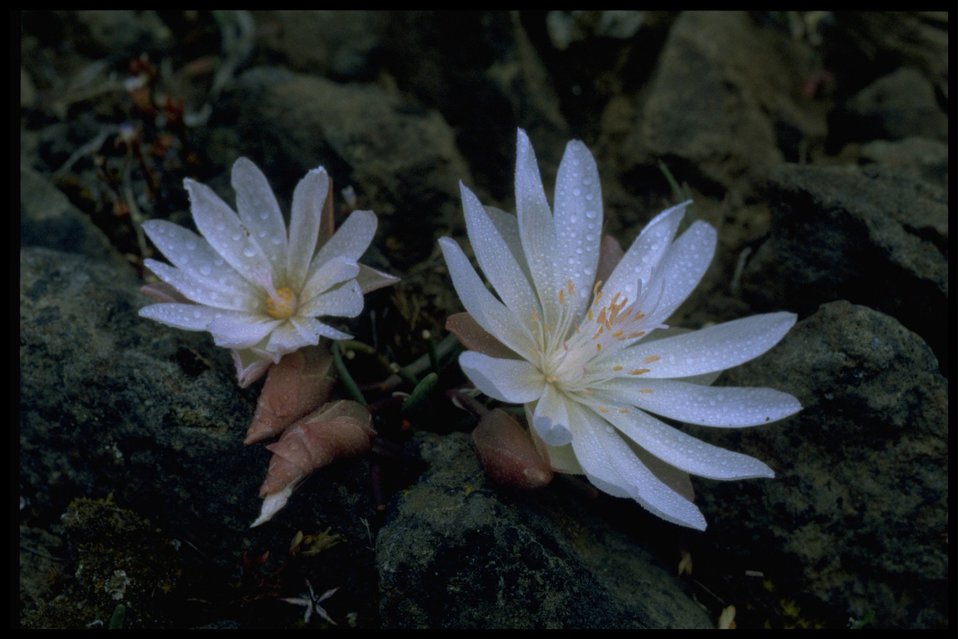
Closeup shot of bitter root (Lewisia rediviva).